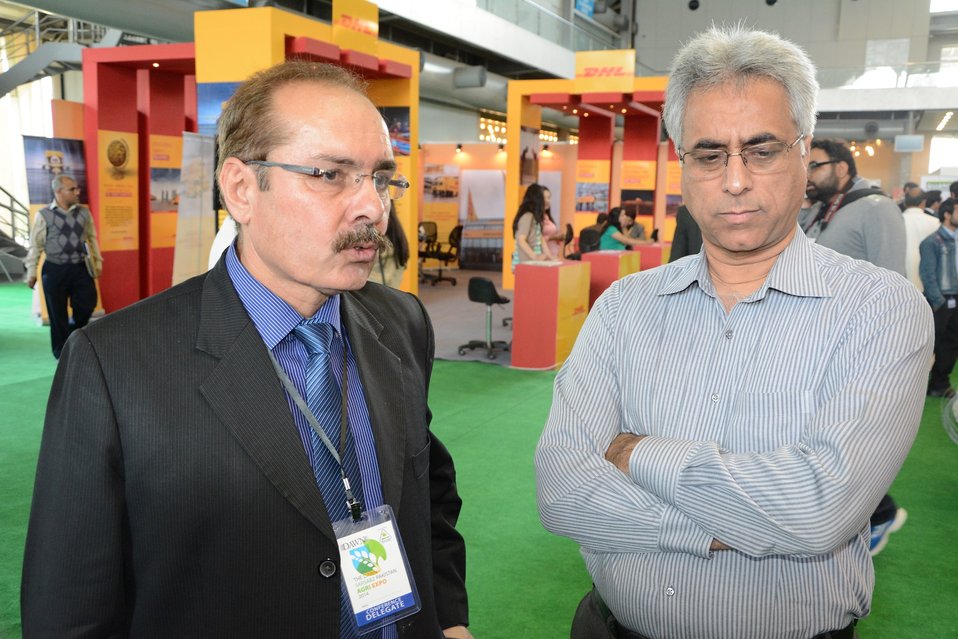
TAP7